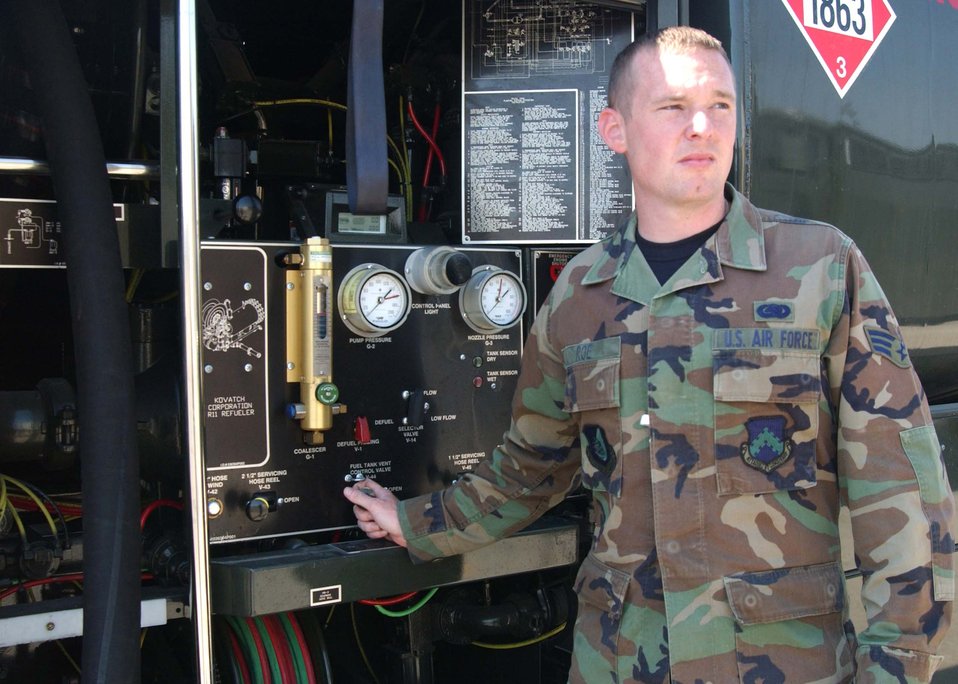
Air Force birthday

Senior Airman Scott Roe monitors the refueling of a KC-135 Stratotanker during the Air Force Birthday, Sept. 18. Airman Roe is a fuels specialist with the 39th Logistics Readiness Squadron, Incirlik Air Base, Turkey.